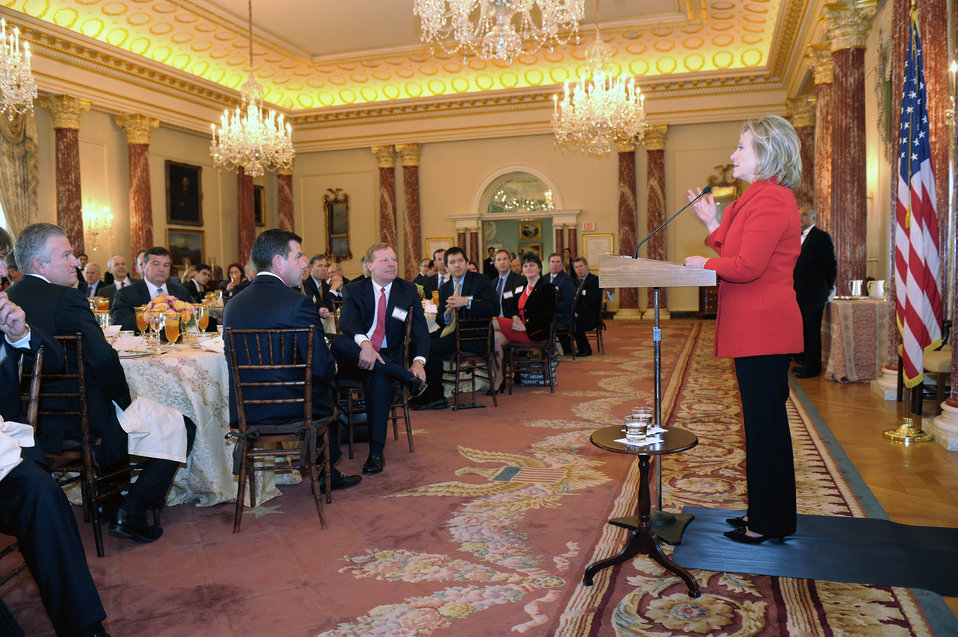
Secretary Clinton Delivers Remarks at a Lunch for the U.S.-Northern Ireland Economic Conference

U.S. Secretary of State Hillary Rodham Clinton delivers remarks at a lunch for the U.S.-Northern Ireland Economic Conference at the U.S. Department of State in Washington, D.C., on October 19, 2010.